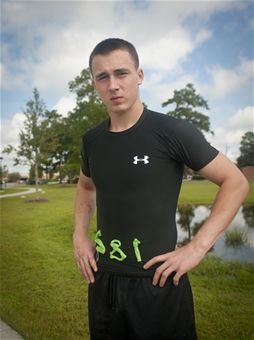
For the win

Airman 1st Class Adam Orton, poses for a photo in the shirt he wore during the 2012 Spartan Death Race, Aug. 9, 2012 at Moody Air Force Base, Ga. One of the first challenges of the race was to sew their number on a shirt in 3-inch block numbers. 74th Aircraft Maintenance Unit aerospace propulsion journeyman.